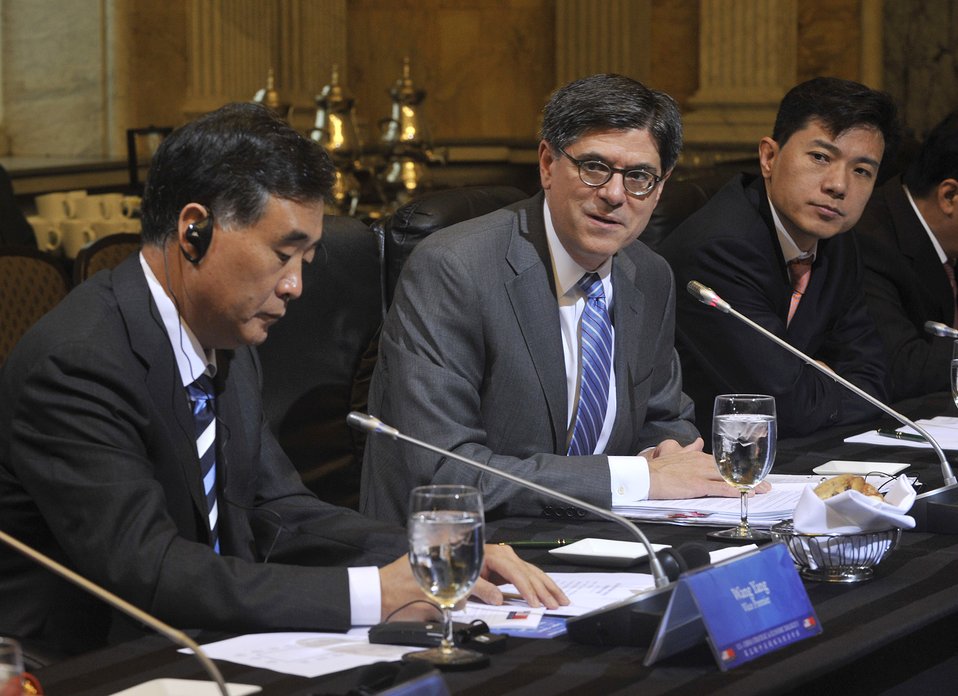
Meeting with U.S. business leaders during U.S. China Strategic Economic Dialogue

July 11, 2013 -- Secretary Lew and Vice Premier Wang Yang (left) met with U.S. business leaders to discuss promoting cross-border trade and investment in both countries and the importance of expanding markets and providing a level playing field for U.S. businesses.